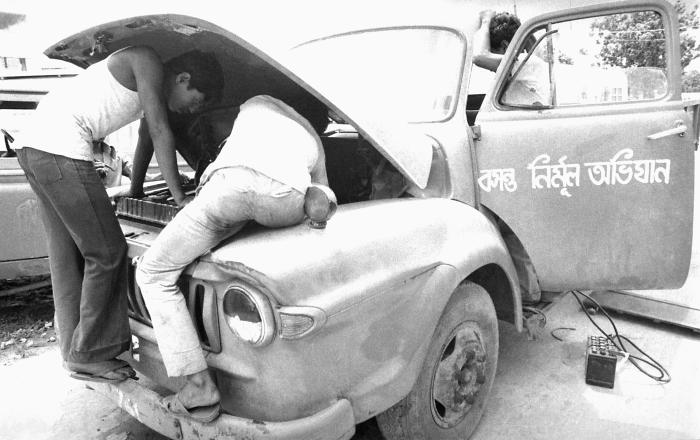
This photograph, showed two mechanics at work repairing a truck located at the E.I.S., and public health personnel headquarters known as 'Smallpox Zero'. This image was part of a series provided by Dr. Stan Foster, and captured by Pierre Claquin, M.D., B.A.C., who at the time was a member of the World Health Organization's Smallpox Eradication Program. It was part of a series captured by former E.I.S. officer, Stanley O. Foster M.D., M.P.H., and was one of a series entitled 'The Story of One Smallpox Jeep', which depicted the travails faced by the jeep, and its occupants of public health practitioners, as they road through the Bangladesh countryside in an attempt to eradicate smallpox from the country. Modes of transport included walking, country boats, motorboats, launches, trains, all terrain vehicles, buses, and trucks like the one shown here.